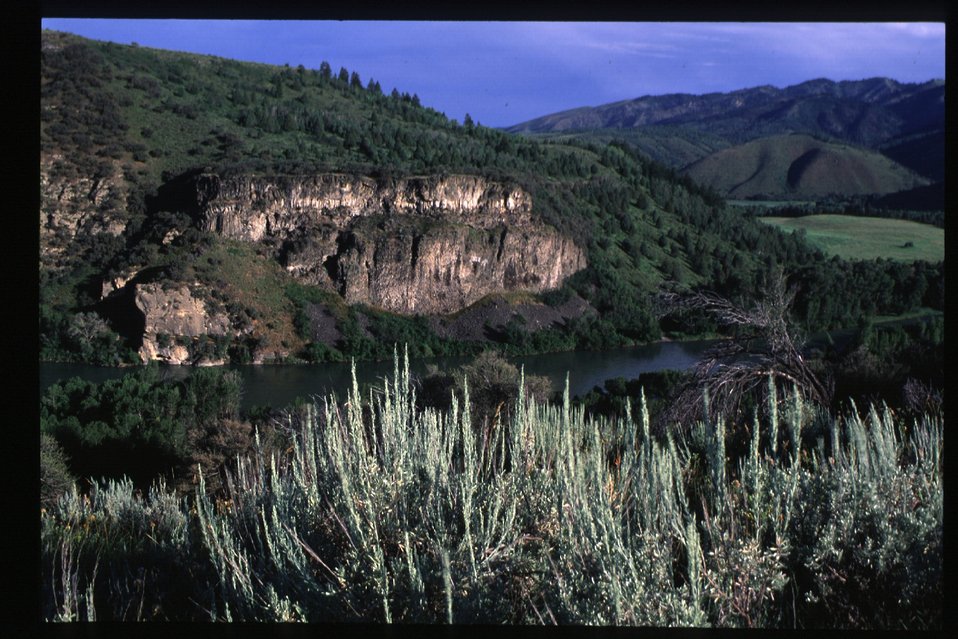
Scenic vista South Snake River USRD Upper Snake River District